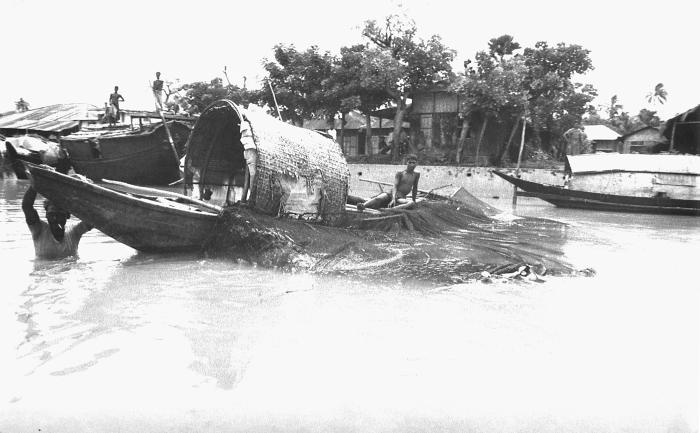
This image depicted a Bangladesh fishing boat with two occupants. One young man was still onboard the craft, and had cast a fishing net from the boat, while its older passenger was chest-deep in the water as he guided the boat through the currents.. This image was part of a series provided by Dr. Stan Foster, and captured by Pierre Claquin, M.D., B.A.C., who at the time was a member of the World Health Organization's Smallpox Eradication Program. It was part of a series photographed by former E.I.S. officer, Stanley O. Foster M.D., M.P.H., and was one of a series entitled 'The Story of One Smallpox Jeep', which depicted the travails faced by the jeep, and its occupants of public health practitioners, as they road through the Bangladesh countryside in an attempt to eradicate smallpox from the country. Much of the Bangladesh culture is based on riverine activities such as fishing and transport.